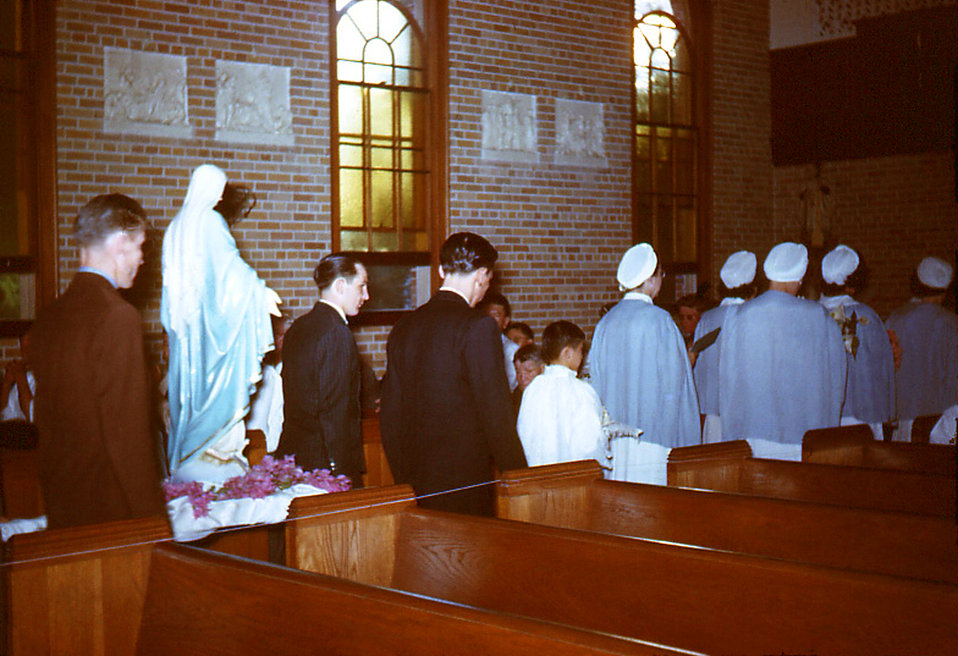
In this historic image, a procession was in progress at a "Crowning of the Virgin" church ceremony that was being held at one of the two churches on the Carville, Louisiana Leprosarium's grounds. There was a Protestant Chapel and a Catholic Chapel, on the facility's grounds. Both religious sanctuaries were built with religious oriented contributions from throughout the United States.